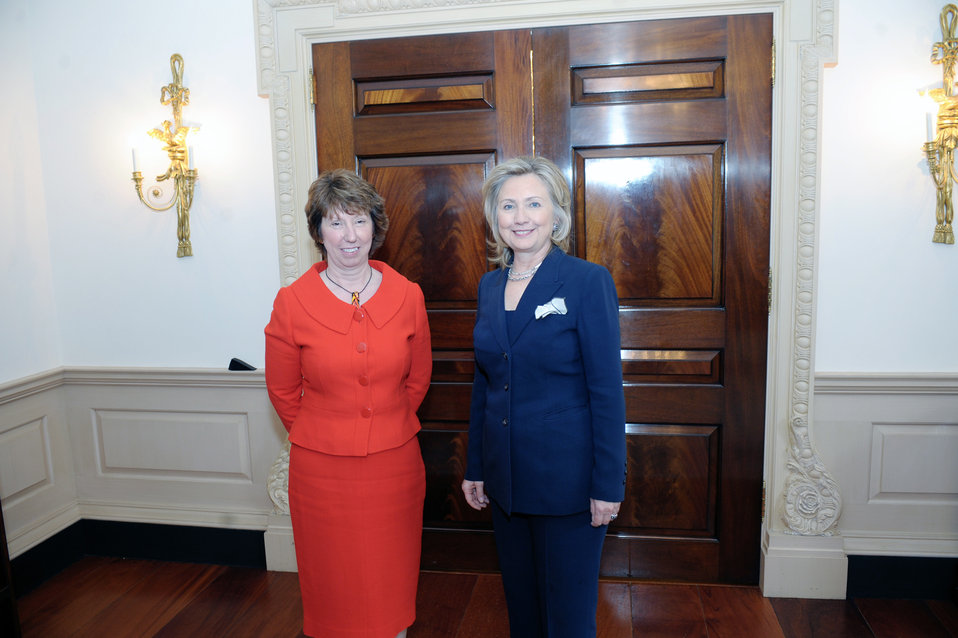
Secretary Clinton Poses for a Photo With EU High Representative Ashton

U.S. Secretary of State Hillary Rodham Clinton holds a bilateral meeting with EU High Representative Catherine Ashton at the U.S. Department of State in Washington, D.C., on September 29, 2010.